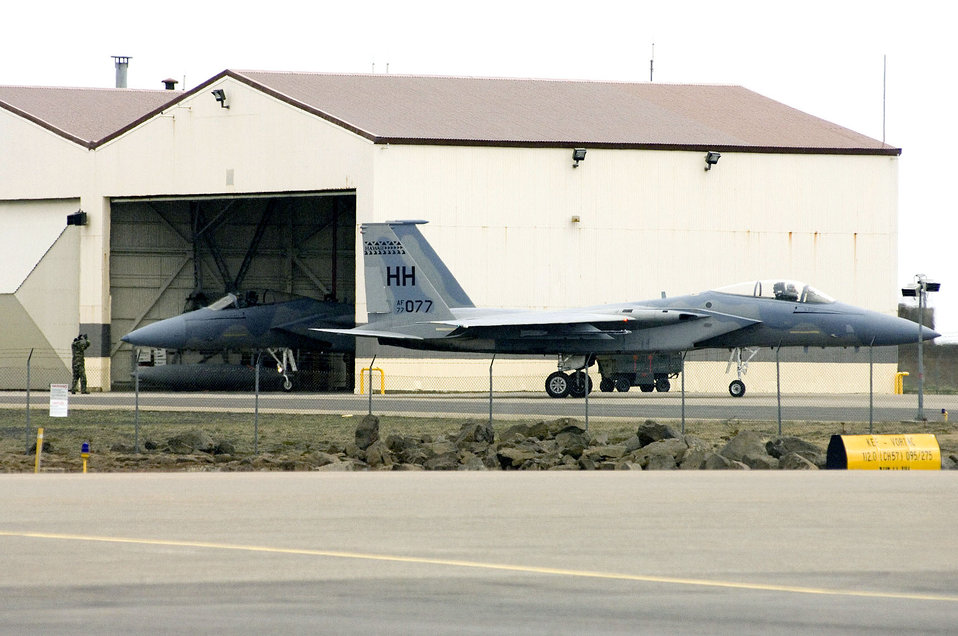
Drawdown at Keflavik

F-15 Eagle operations will continue a while longer at Naval Air Station Keflavik, Iceland, while Airmen and Sailors reduce operations after more than 50 years of U.S. presence at the base. The F-15s and crews are from the Hawaii Air National Guard's 154th Fighter Wing at Hickam Air Force Base.